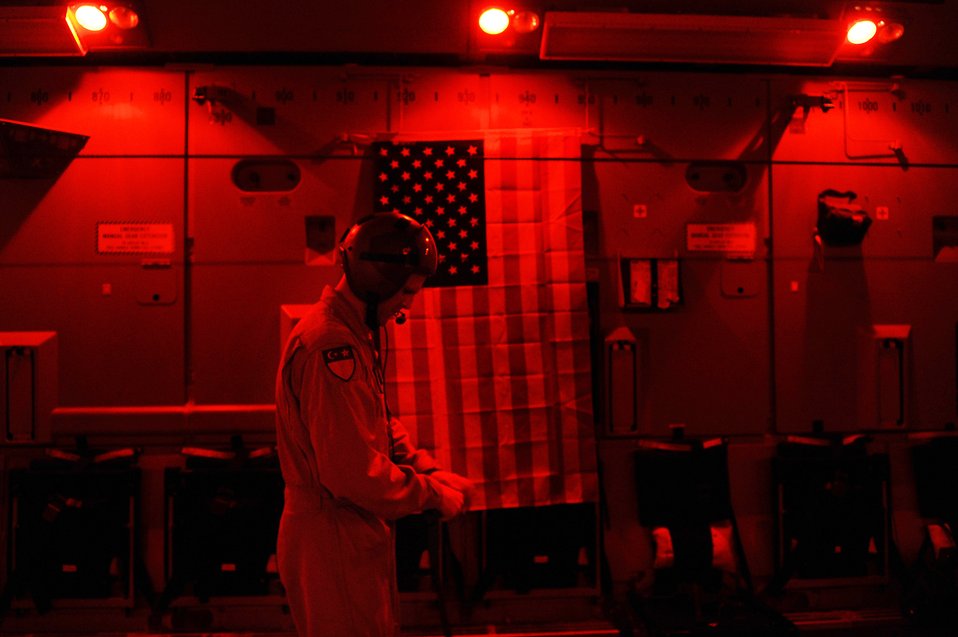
Supply drop in Afghanistan

Staff Sgt. Chad Beach begins to prepare a C-17 Globemaster III after dropping supplies for a forward operating base in Afghanistan, Aug. 27, 2009, in support of Operation Enduring Freedom. Sergeant Beach Sergeant Beach is a loadmaster with the 817th Expeditionary Airlift Squadron, and deployed from McChord Air Force Base, Wash.